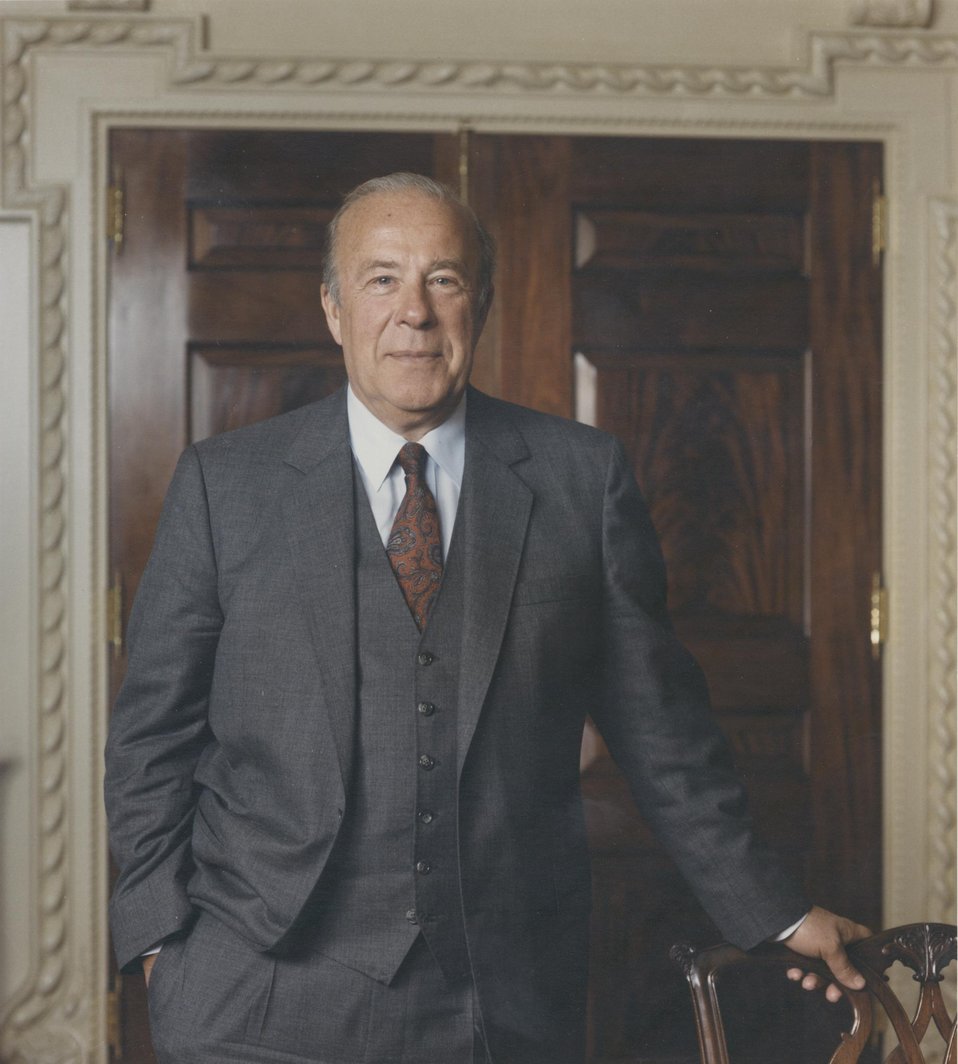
George P. Shultz, U.S. Secretary of State, July 16, 1982 to January 20, 1989